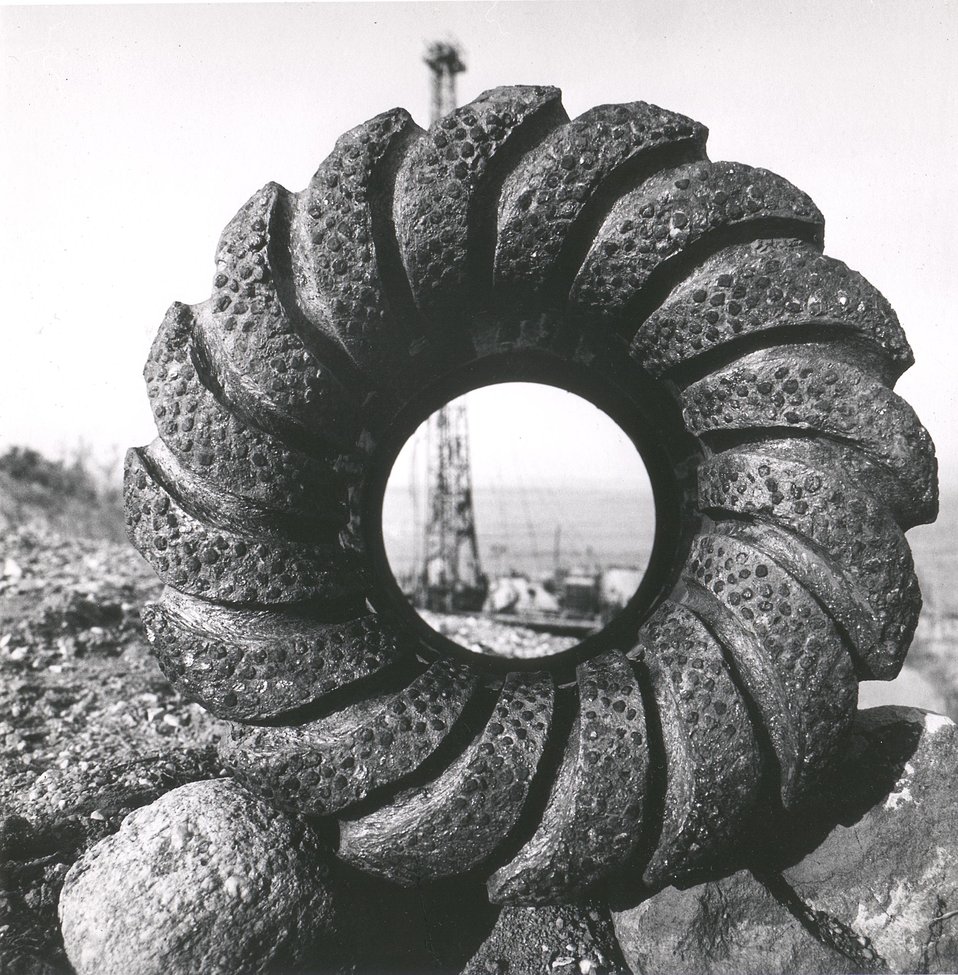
Diamond Coring bit. Diamonds are set in curved matrix. Undated.